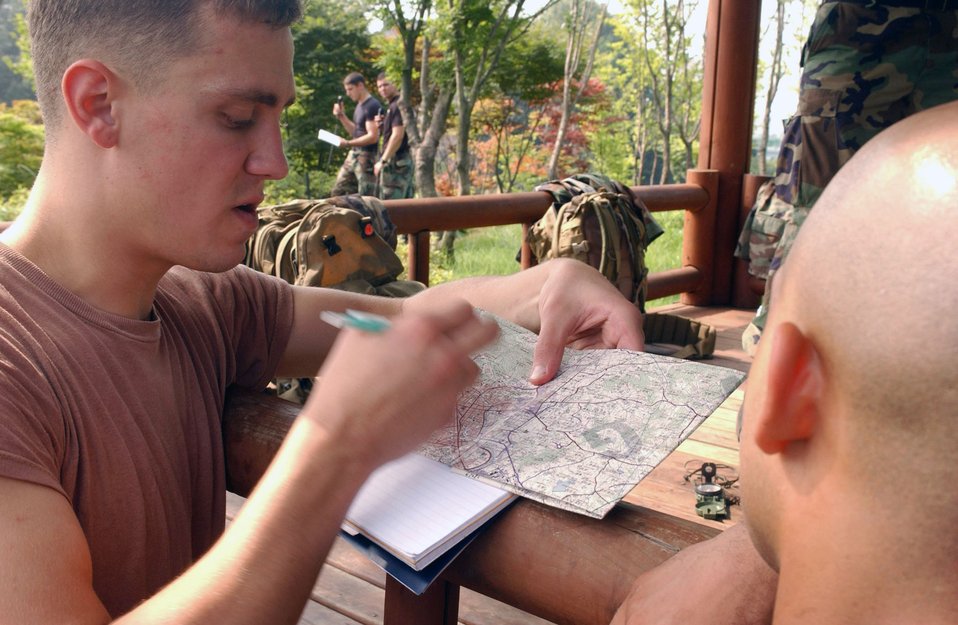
Controllers train to put bombs on target, on time

Senior Airman Kevin Rosner teaches Staff Sgt. Vincent Reed how to interpret a map as tactical air controllers call in simulated air support missions behind them July 12 in Jeonju, South Korea. Airman Rosner is a joint terminal attack controller trainer from Army Garrison Casey. The JTACs, assigned to the 604th Air Support Operations Squadron at the same Army location, teamed with pilots from both the 35th and 80th Fighter Squadrons, based at Kunsan Air Base, South Korea, to hone their abilities to perform close-air support missions. Sergeant Vincent is assigned to the 8th Security Forces Squadron.